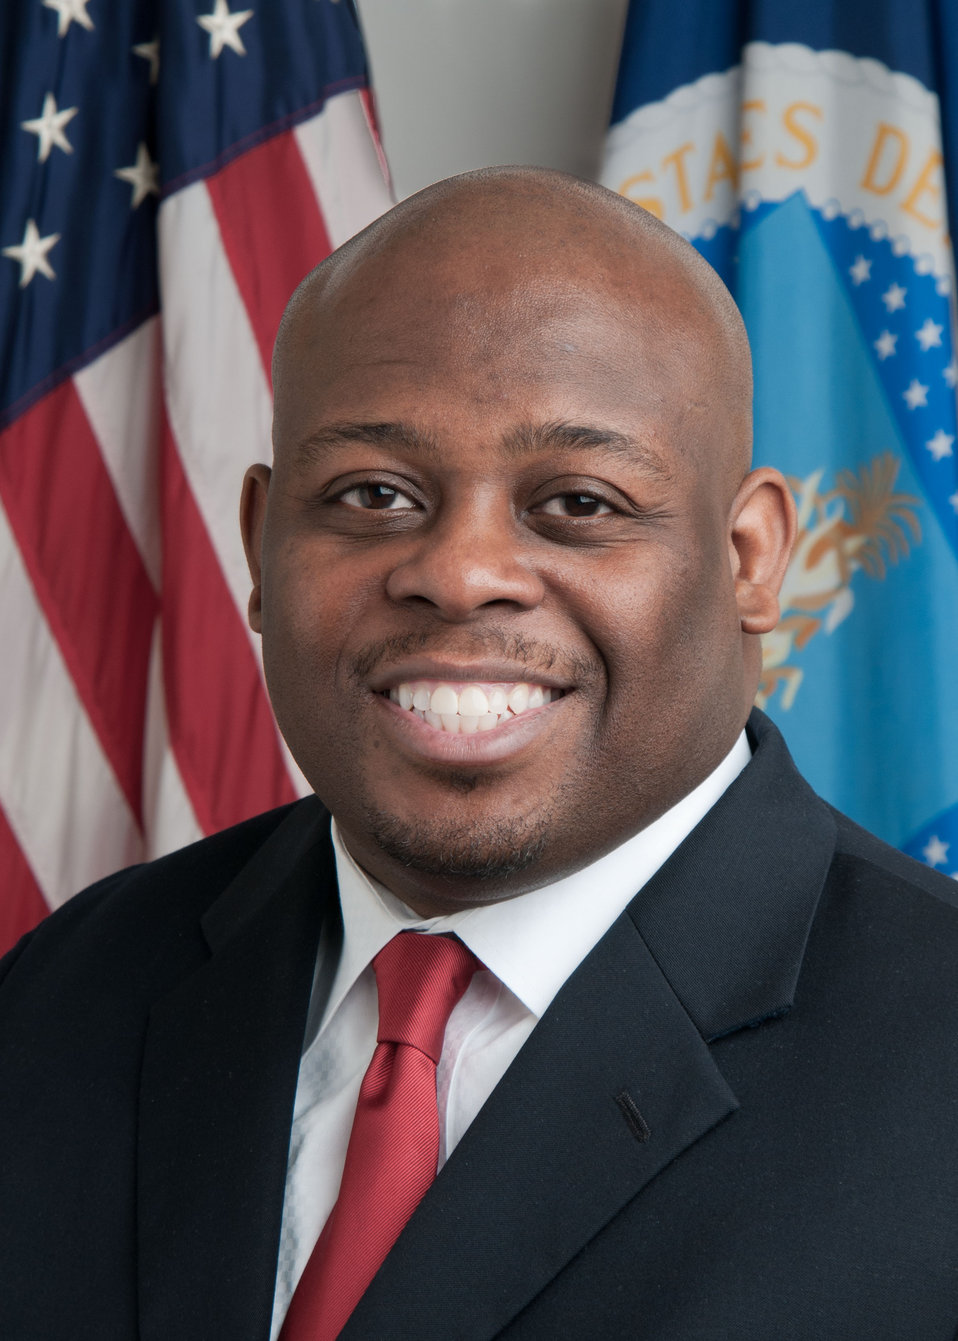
20120313-DM-LSC-0014 Acting Director of Office of Small and Disadvantaged Business Utilization Dexter Pearson

Acting Director of Office of Small & Disadvantaged Business Utilization Dexter Pearson.